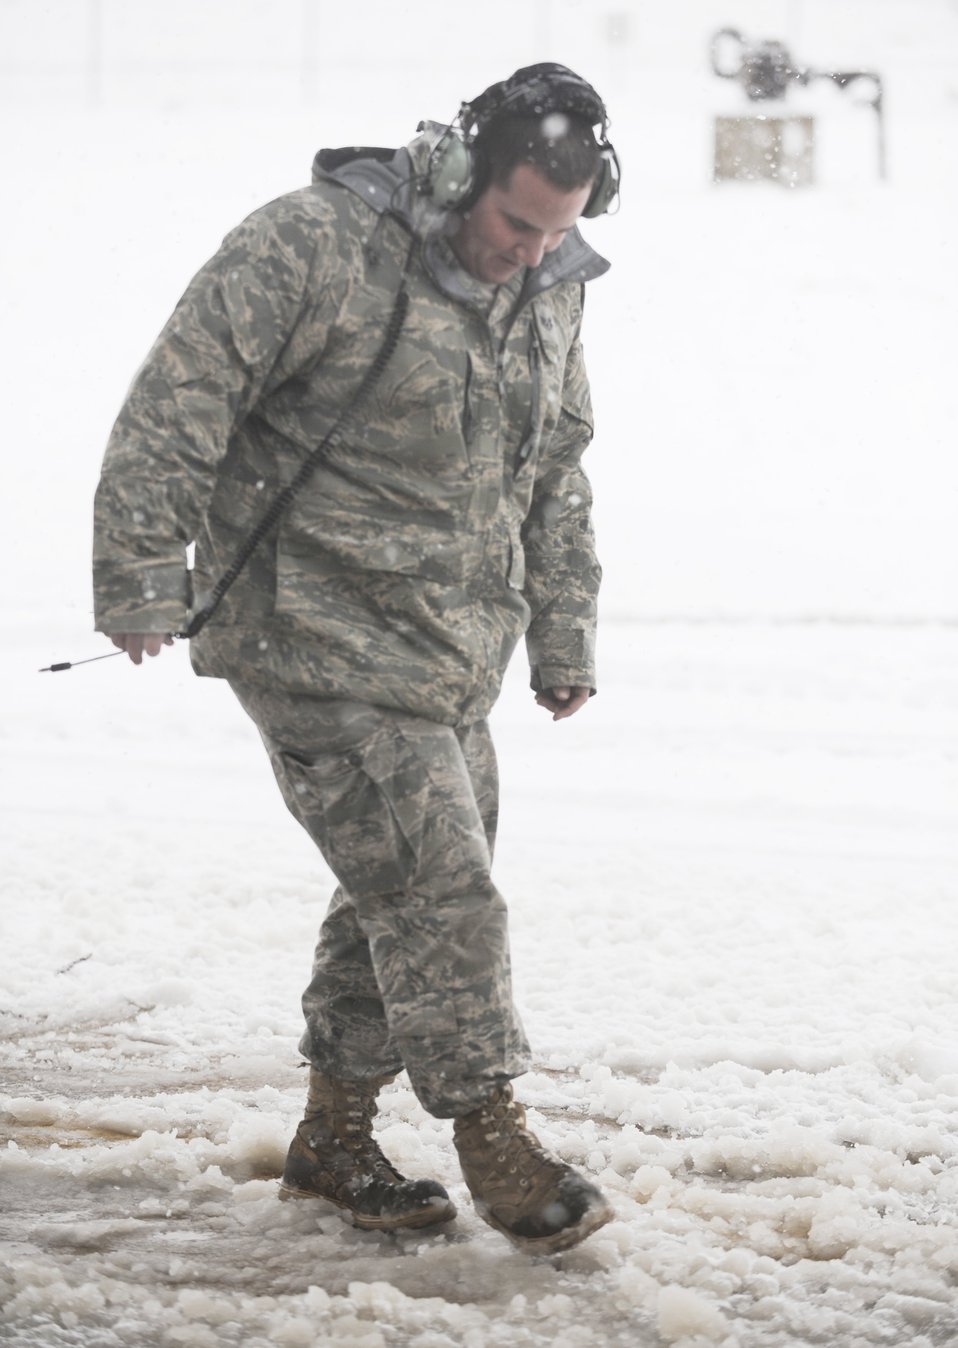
New York maintainers secure aircraft

Staff Sgt. Thomas Beall watches his step as he works on the flightline during a snowstorm at the New York National Guard's 106th Rescue Wing at Francis S. Gabreski Airport in Westhampton Beach, N.Y. He is assigned to the 106th Aircraft Maintenance Squadron.